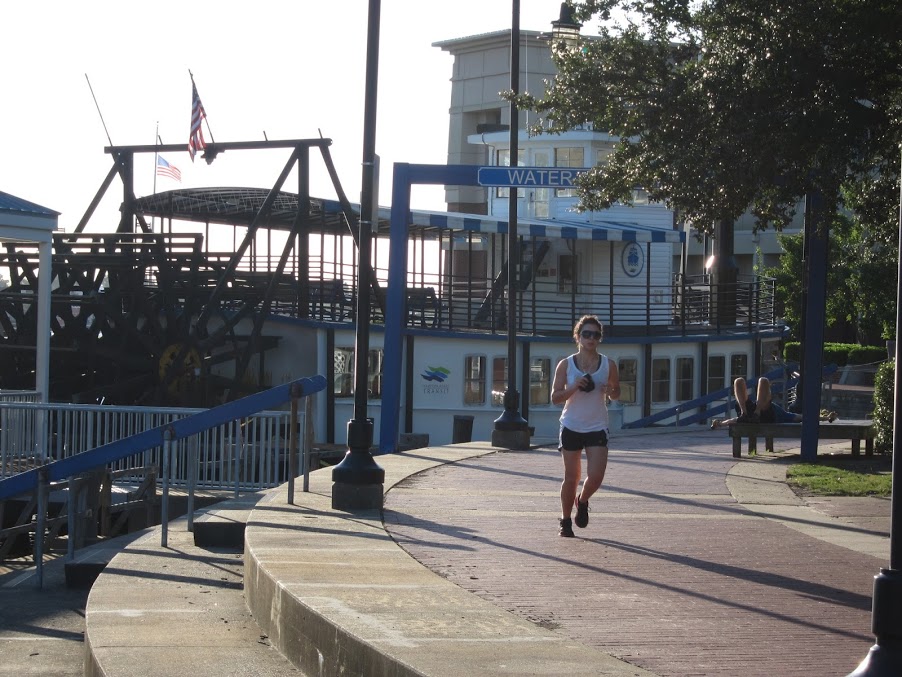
Runner in Portsmouth Virginia

Winner of EPA’s 2012 Programs and Policies Smart Growth Achievement Award, Portsmouth, Virginia created a plan to make the city more walkable, sustainable, and convenient. A walking path along the Elizabeth River brings residents and visitors downtown for exercise, picnics, and concerts.